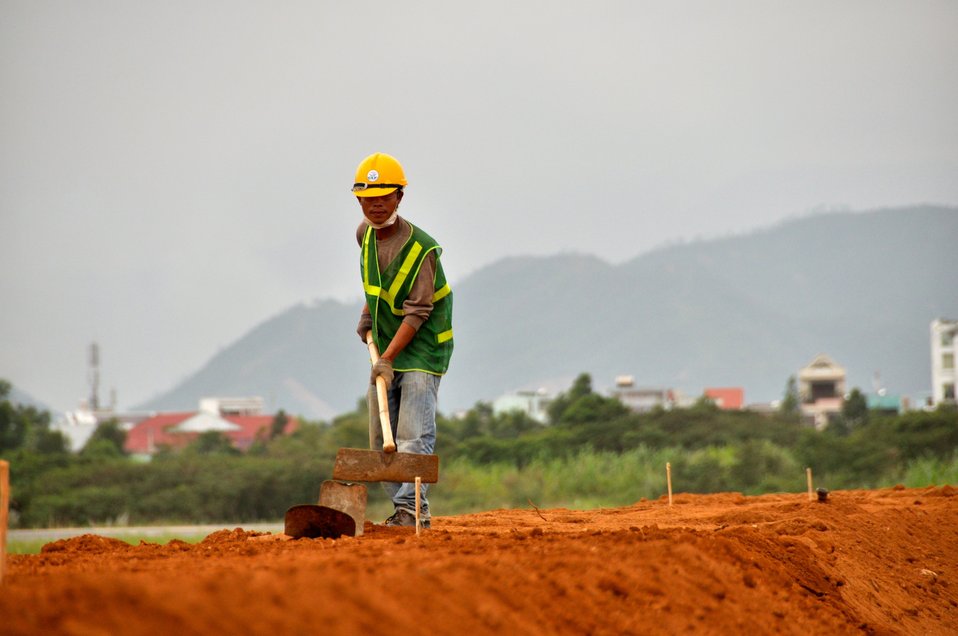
Site Preparation for Environmental Remediation of Dioxin Contamination at Danang Airport

Danang Airport, January 22, 2013